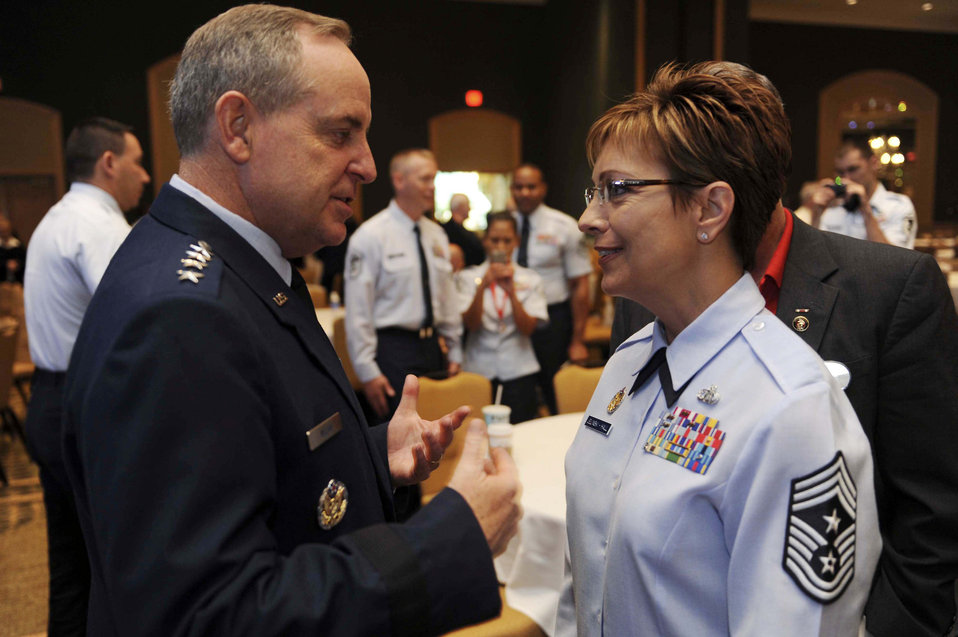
CSAF talks leadership

Air Force Chief of Staff Gen. Mark A. Welsh III talks with Chief Master Sgt. Denise Jelinski-Hall after speaking at a senior leaders’ perspective during the Air Force Sergeants Association Professional Airmen's Conference Aug. 15, 2012, in Jacksonville, Fla. During his speech, Welsh emphasized the role leaders play in Airmen's lives, as well as the importance of leaders getting to know their Airmen.